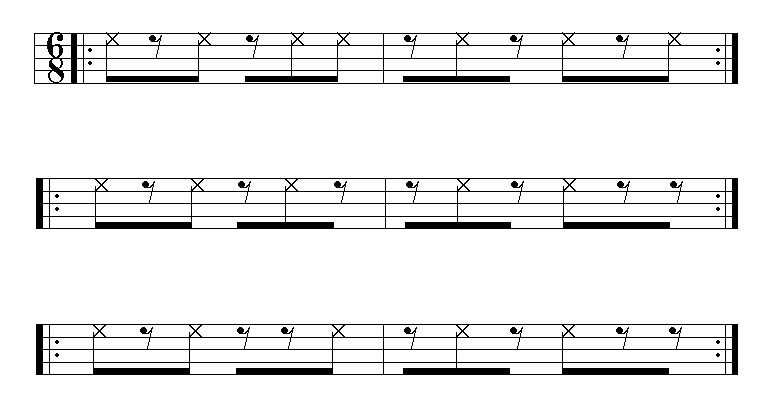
the three key pattern North Americans refer to as 6/8 clave